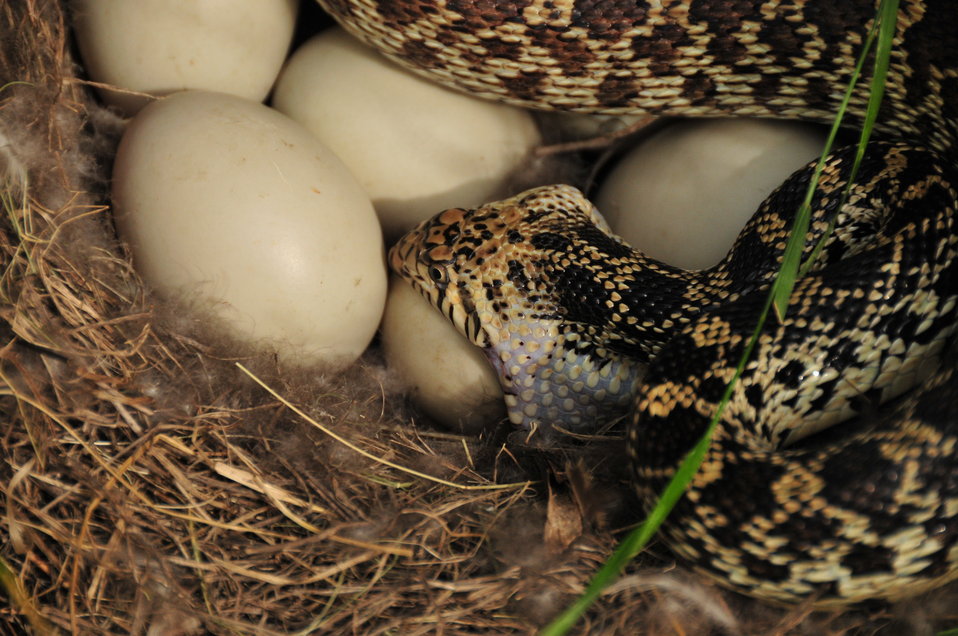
Bullsnake Eating Mallard Egg

Bullsnakes can be serious predators of ground nesting birds and their eggs. This scene was discovered when the hen mallard flushed from her nest, revealing that the bullsnake was taking an egg from underneath the incubating hen.